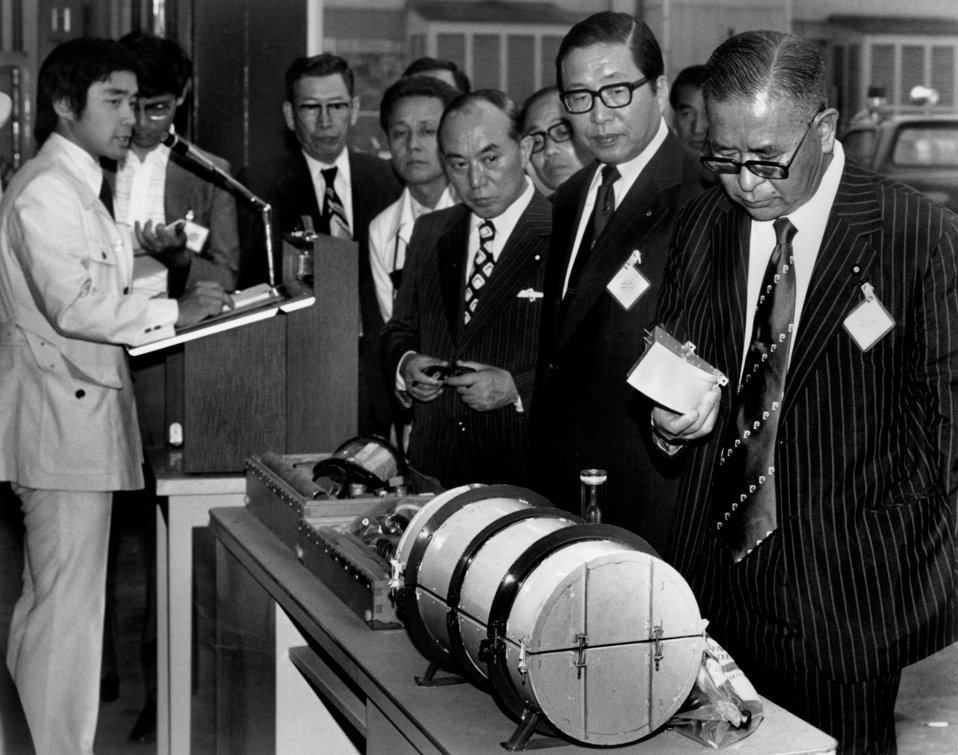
Japanese visit to ERDA ( Energy Research and Development Administration) Oak Ridge

77-392 DOE photo by Frank Hoffman

Japanese visit to ERDA ( Energy Research and Development Administration) Oak Ridge Tennessee 9-14-1977